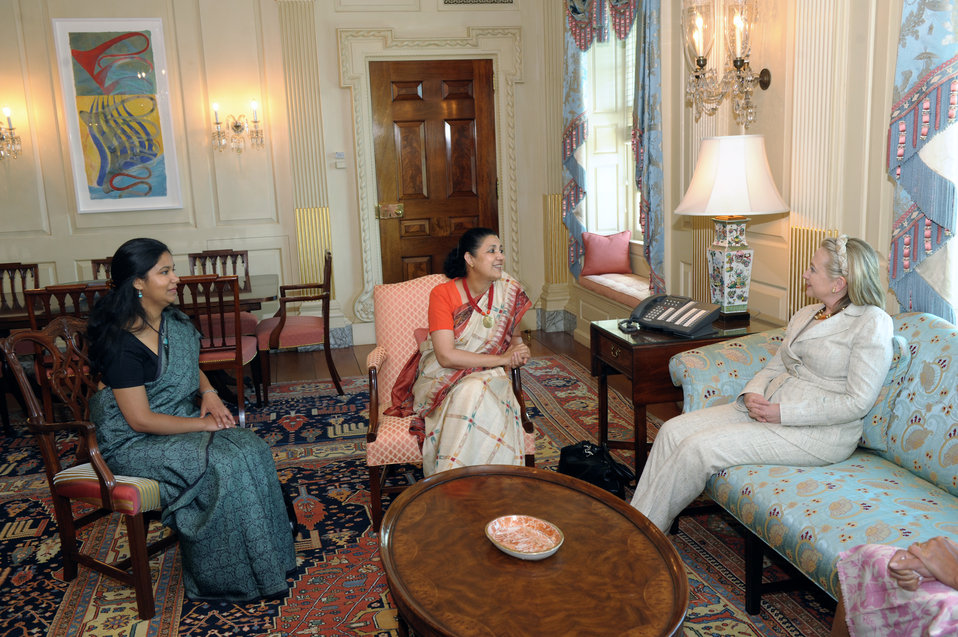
Secretary Clinton Meets With Indian Ambassador Shankar

U.S. Secretary of State Hillary Rodham Clinton, right, meets with Indian Ambassador the U.S. Meera Shankar, center, at the U.S. Department of State in Washington, D.C., on July 27, 2011.